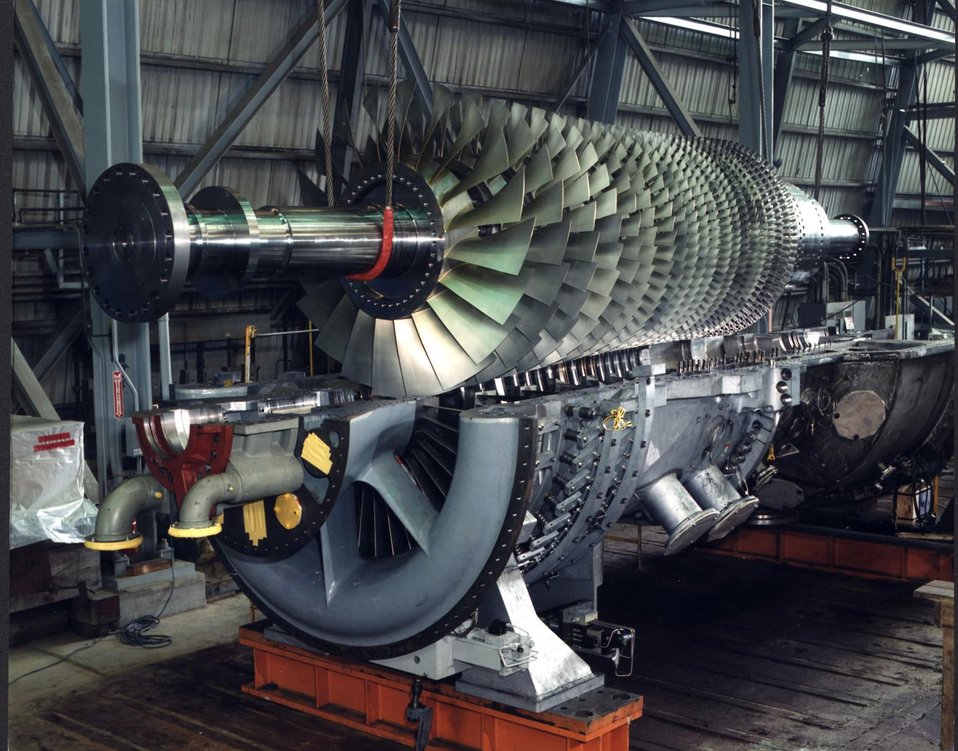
NATURAL GAS TURBINE TECHNOLOGY.

NATURAL GAS TURBINES ARE BEING DEVELOPED TO PRODUCE ELECTRICITY IN A SIMPLE, LOW COST ENVIRONMENTALLY FRIENDLY WAY. DOE'S NATIONAL ENERGY TECHNOLOGY LABORATORY (NETL) INITIATED THE ADVANCED TURBINE SYSTEMS (ATS) PROGRAM AND HAS PARTNERED WITH INDUSTRY TO PRODUCE A NEW GENERATION OF HIGH EFFICIENCY GAS TURBINES FOR CENTRAL STATION ELECTRICITY PRODUCTION, USING CLEAN BURNING NATURAL GAS.